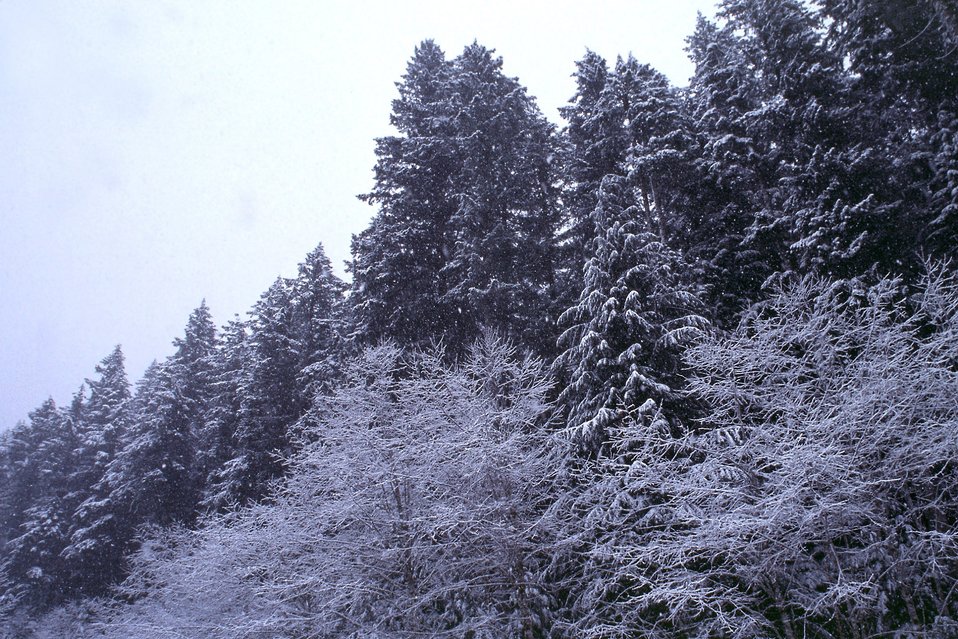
Mid Winter forest scene in the Mollala Corridor.